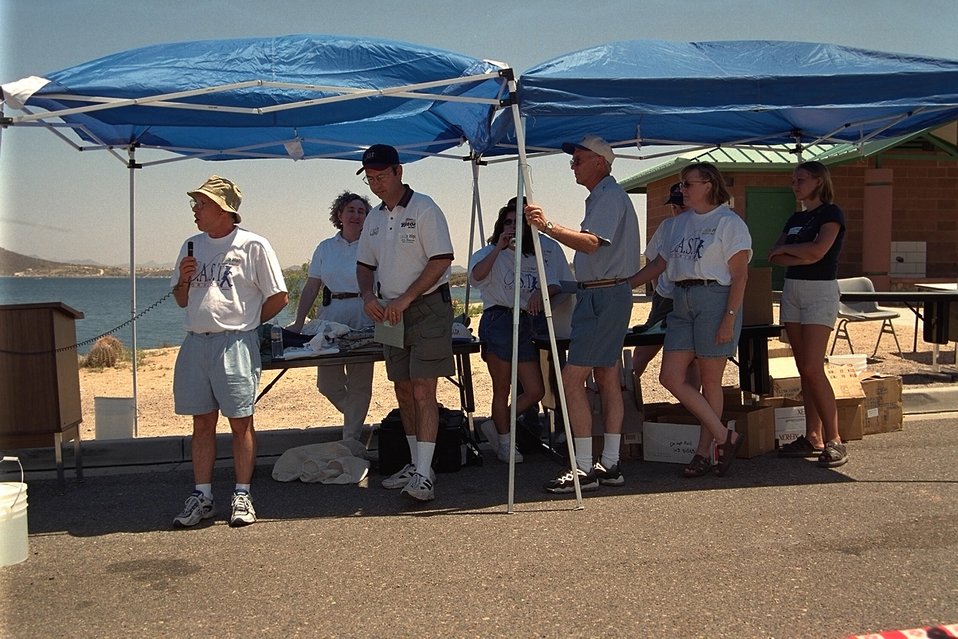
Everyone has a great time at Catch A Special Thrill (CAST), a day of fishing at Lake Pleasant for disabled children.